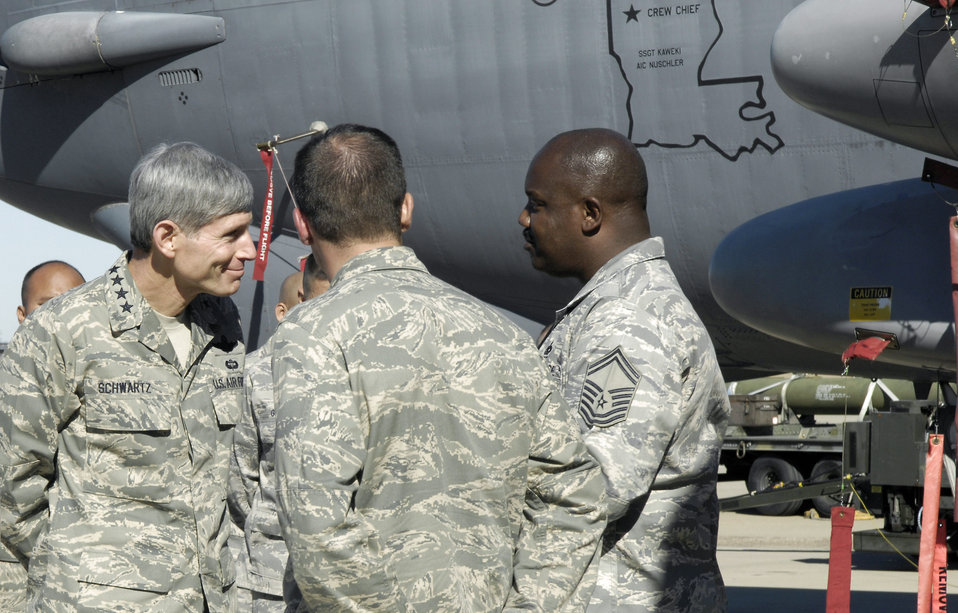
Chief of staff visits Barksdale

Chief of Staff of the Air Force Gen. Norton Schwartz familiarizes himself about the 2nd Aircraft Maintenance Squadron's mission Nov. 25 at Barksdale Air Force Base, La.